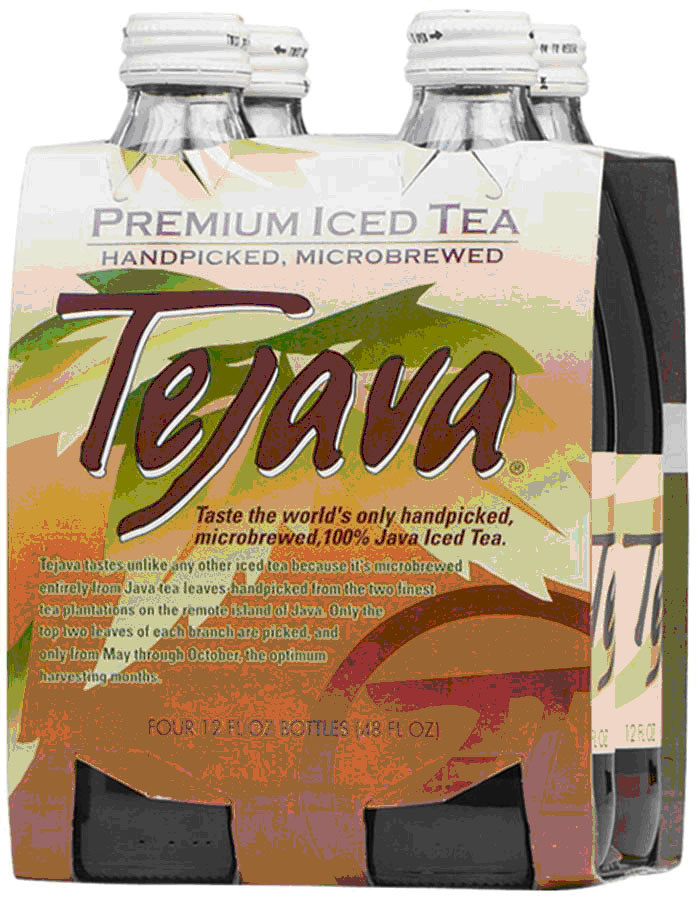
RECALLED - Iced Tea

December 9, 2011 - Product Recall - Voluntarily Recall of Limited Quantity of 12 oz Tejava® Premium Iced Tea.